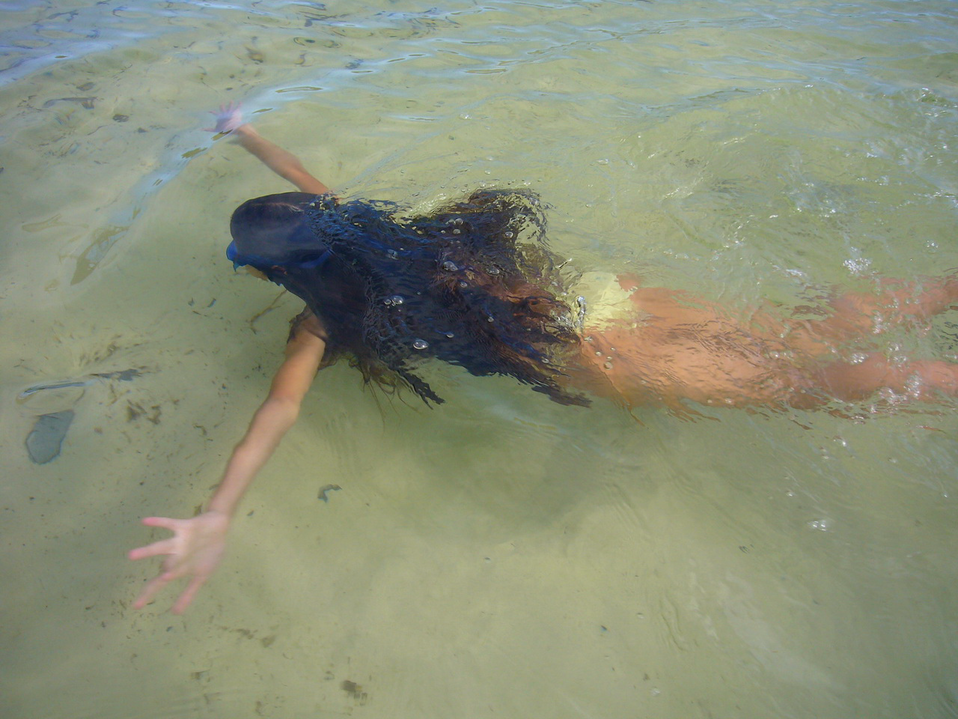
Fotos de los refugios y reservas de Itaipu, tomadas en los años 2007 y 2008 por mí